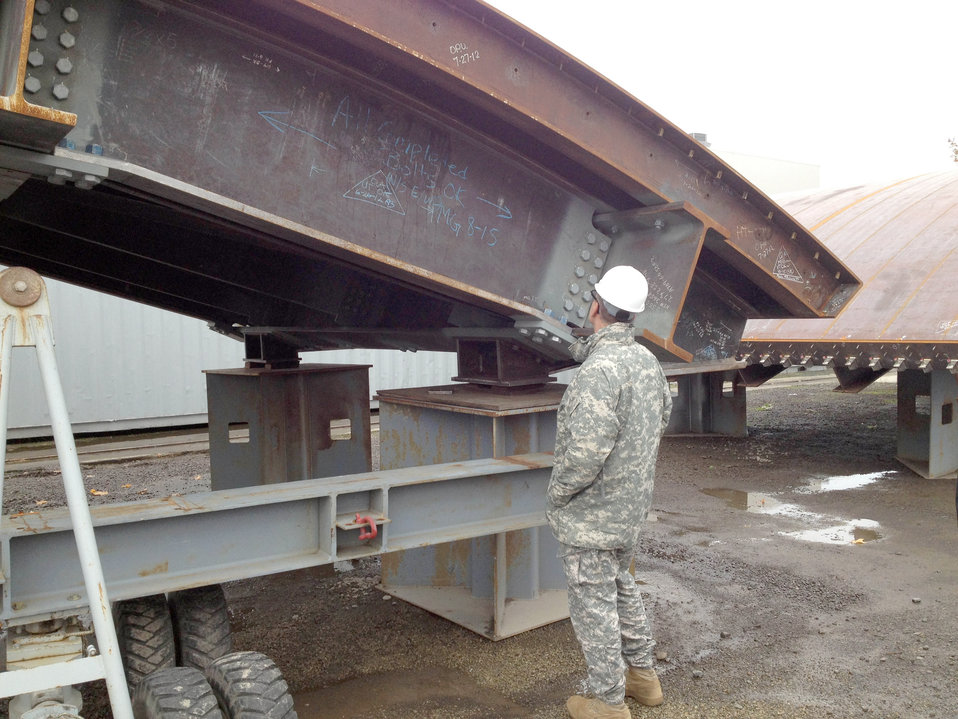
District staff checks progress on Folsom Dam auxiliary spillway gates

Col. Bill Leady, commander of the U.S. Army Corps of Engineers Sacramento District, takes a closer look at a tainter gate for the new Folsom Dam auxiliary spillway Nov. 28, 2012, at the Oregon Iron Works’ Vancouver, Wash., facility.
“Being [at the fabrication facility] was like being at a metal shop for the giants,” Leady said.
Leady, and other Sacramento District staff, took a tour of the site to gauge the progress on 12 massive bulkhead and tainter gates, which will control the flow of water from Folsom Lake through the spillway’s control structure. The spillway project is a joint effort of the U.S. Army Corps of Engineers, the U.S. Bureau of Reclamation, and state and local partners to reduce flood risk throughout the Sacramento region. The project is scheduled to be completed in 2017.